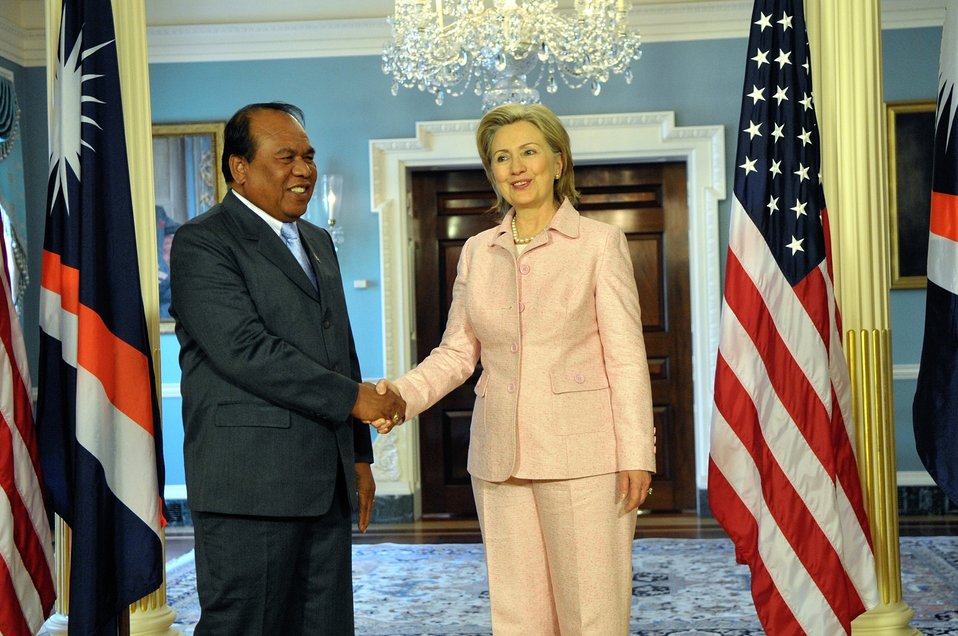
Secretary Clinton Holds a Bilateral With President of the Marshall Islands Iroij Jurelang Zedkaia

U.S. Secretary of State Hillary Rodham Clinton holds a bilateral meeting with His Excellency Iroij Jurelang Zedkaia, President of the Republic of Marshall Islands, in the Treaty Room at the U.S. Department of State, Washington, D.C., May 14, 2010.